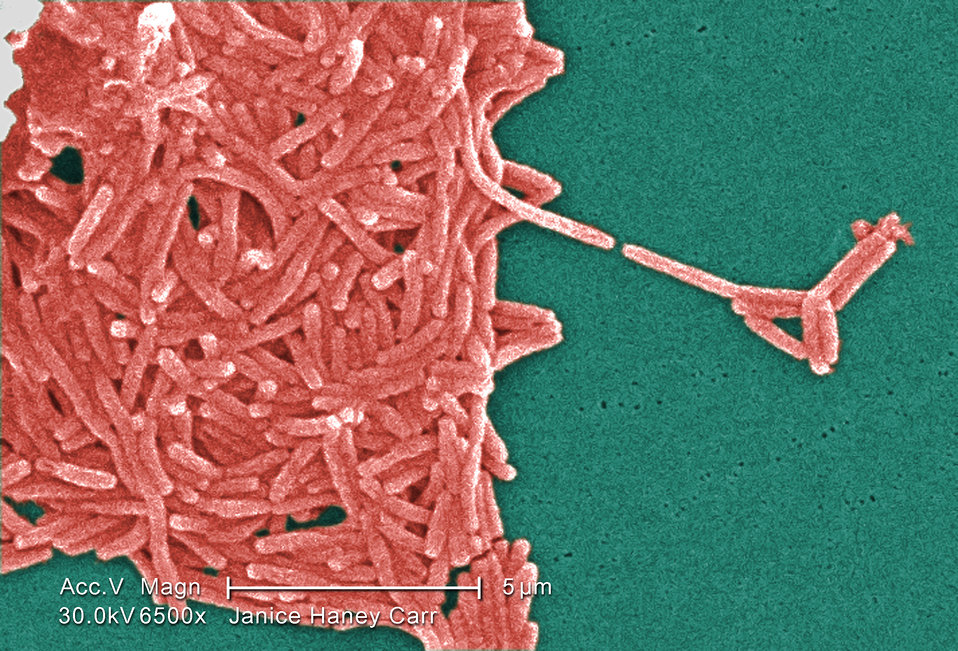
Under a high magnification of 6500X, this colorized scanning electron micrograph (SEM) depicted a large grouping of Gram-negative Legionella pneumophila bacteria. Please see PHIL 11092 through 11152 for additional SEMs of these organisms, and specifically PHIL 11092 for a black and white version of this image.